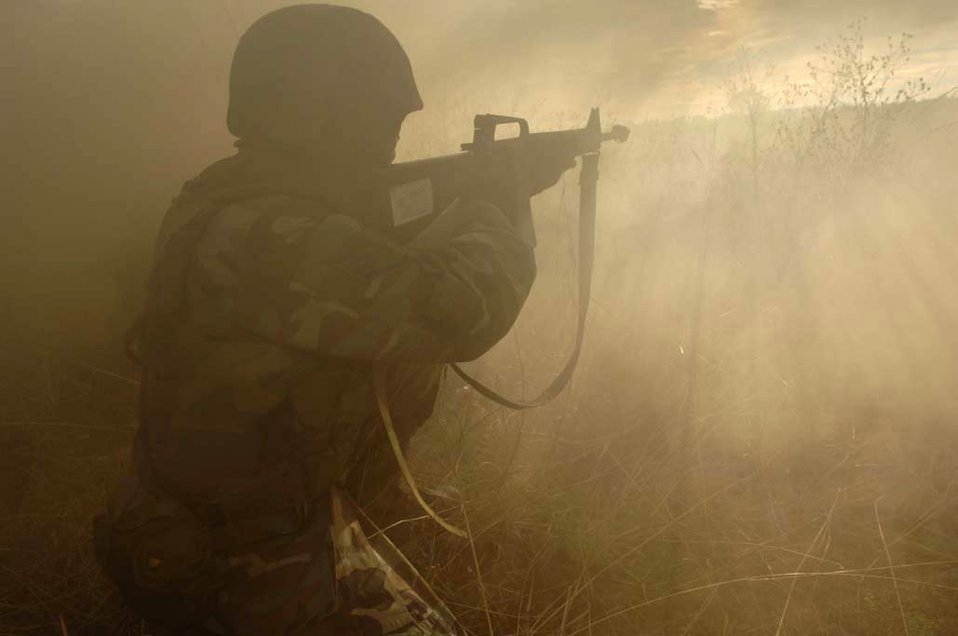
Fire and smoke

FAIRCHILD AIR FORCE BASE, Wash. (AFPN) -- Staff Sgt Delton Richards takes aim in the midst of enemy fire and smoke from a